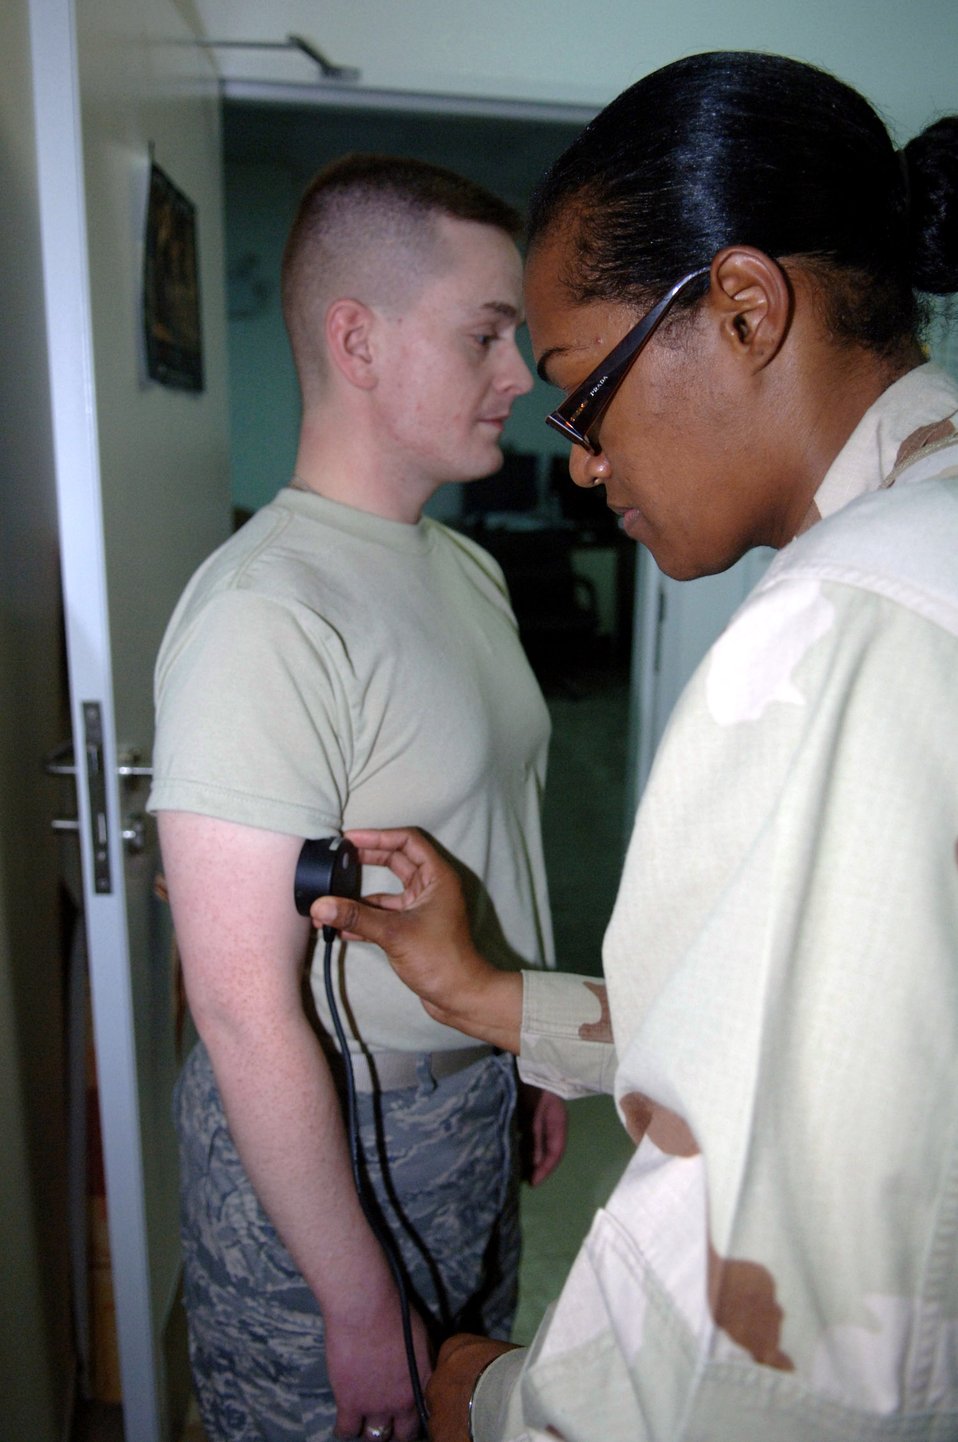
Nutrition flight helps keep servicemembers fit to fight

Capt. Saunya Bright, a 332nd Expeditionary Medical Support Squadron nutrition flight dietician, administers a body composition analysis on Airman 1st Class David Mann, a 332nd Air Expeditionary Wing chaplain's assistant. Captain Bright is deployed from Lackland Air Force Base, Texas, and Airman Mann is deployed from Laughlin AFB, Texas.